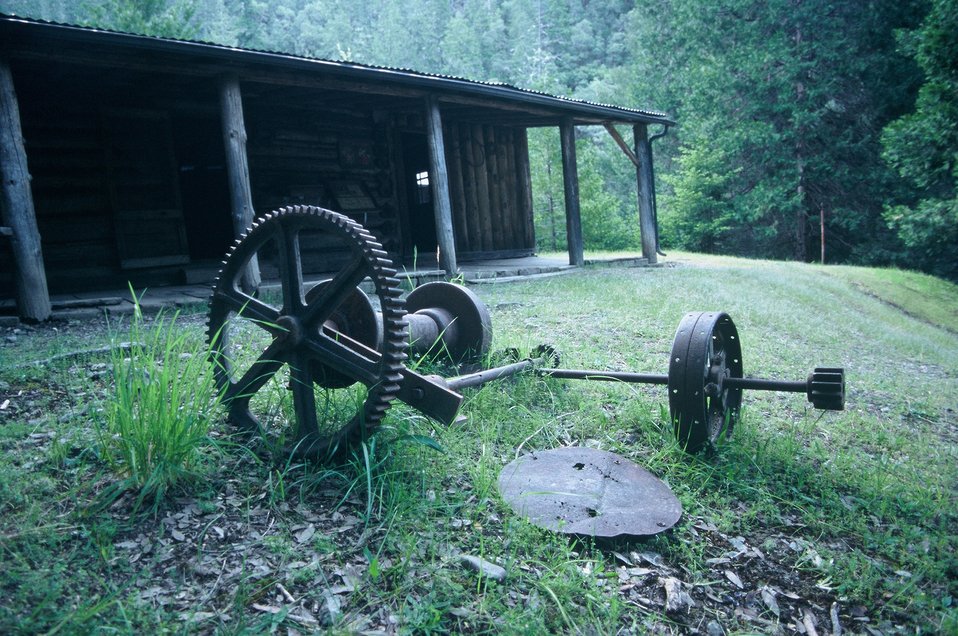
Whisky Creek Cabin along the Wild section of the Rogue River from Grave Creek to Foster Bar. 3100 cfs at Grants Pass and 5300 at Agness.